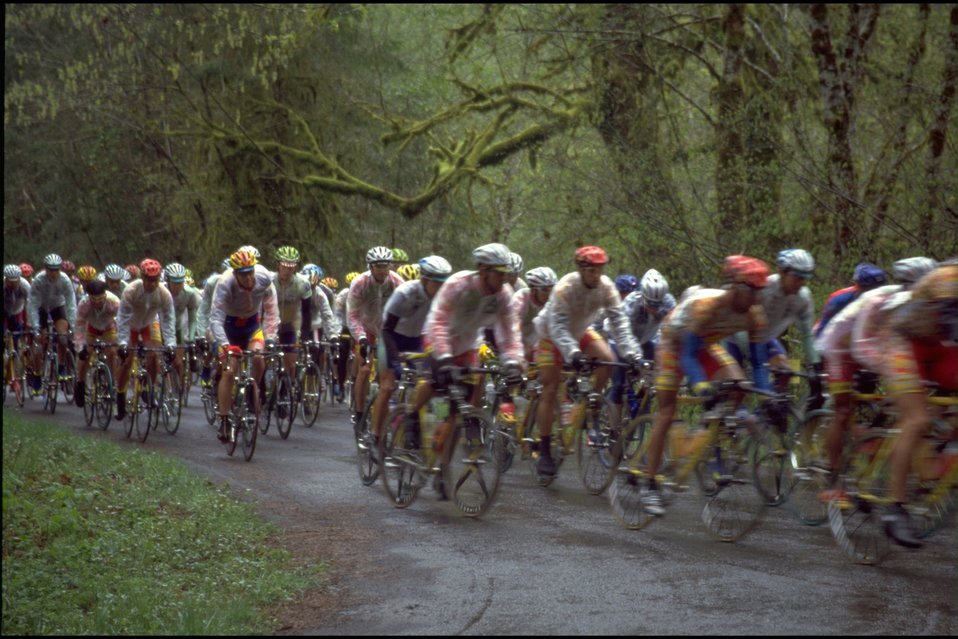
Tour of Willamette.